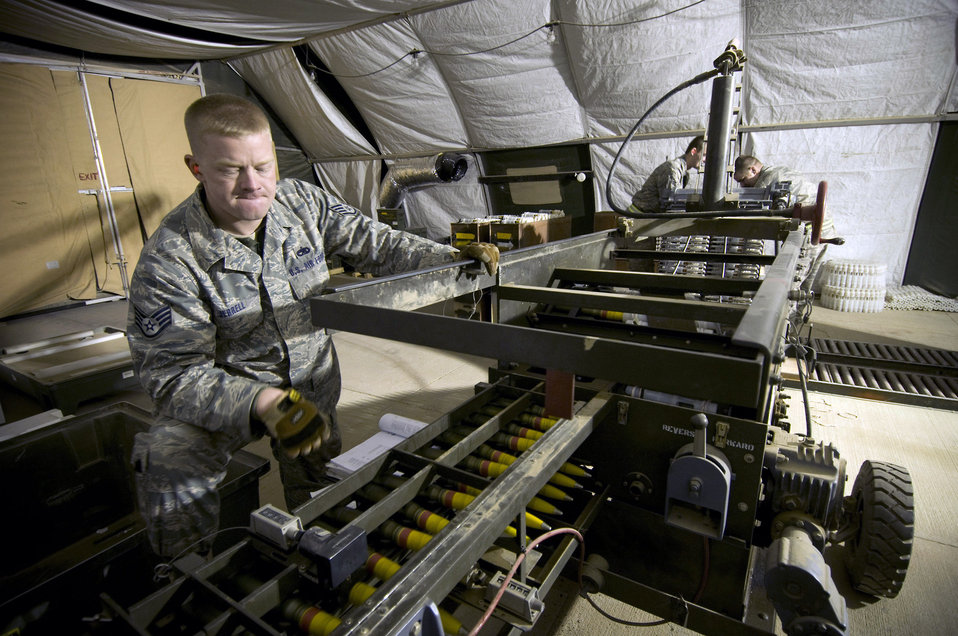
Feeding the Thunderbolt II

Staff Sgt. James Jerrell inspects 30mm round as they are processed through a GFU-7